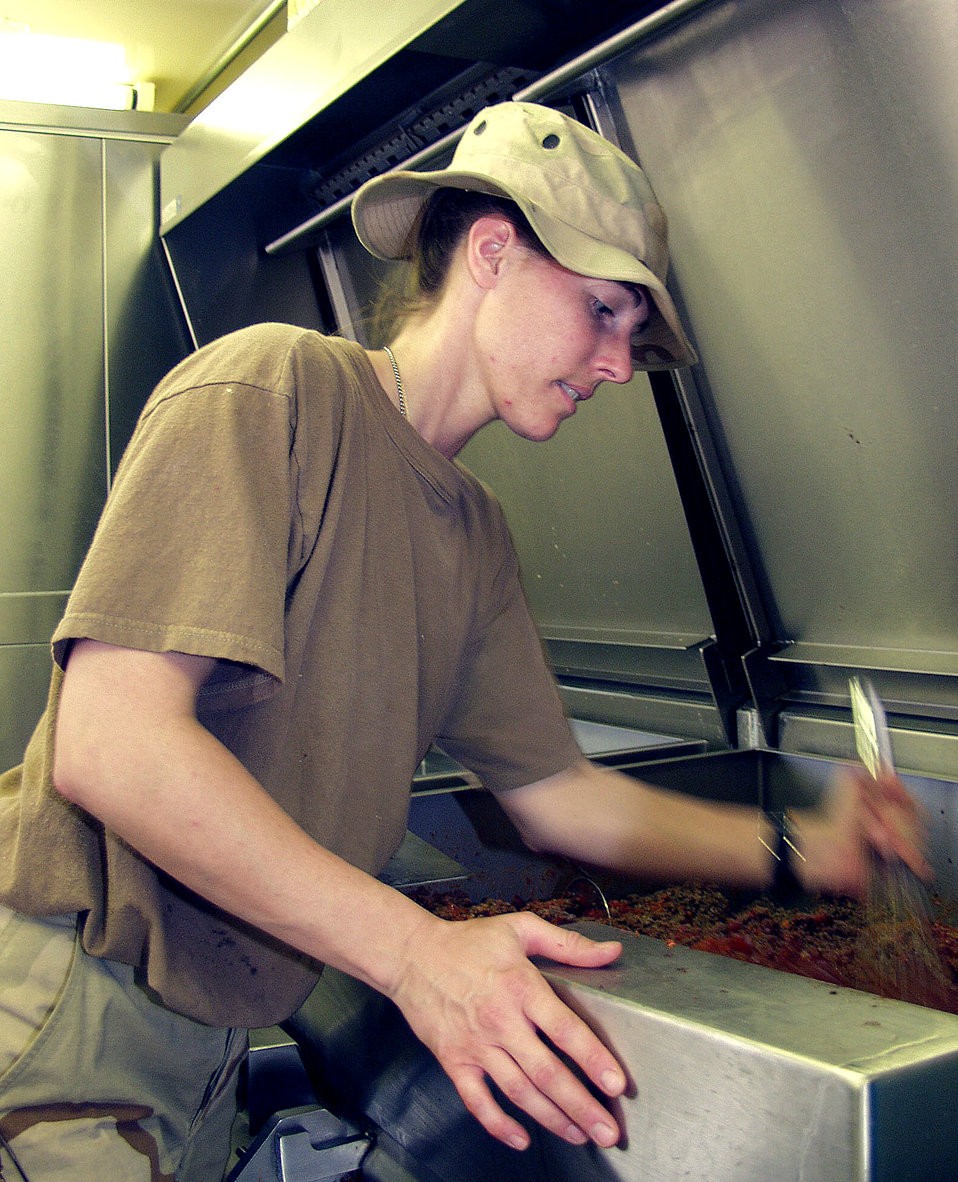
Deployed chef

OPERATION IRAQI FREEDOM –- Inside a containerized deployable kitchen, Staff Sgt. Theresa Schaible mixes ingredients for Sloppy Joes. The 386th Expeditionary Services Squadron food services members feed thousands of military members several times daily. The kitchen always stays open, even in Alarm conditions, so that food will be available afterward. Operation Iraqi Freedom is the multinational coalition effort to liberate the Iraqi people, eliminate Iraq’s weapons of mass destruction and end the regime of Saddam Hussein.